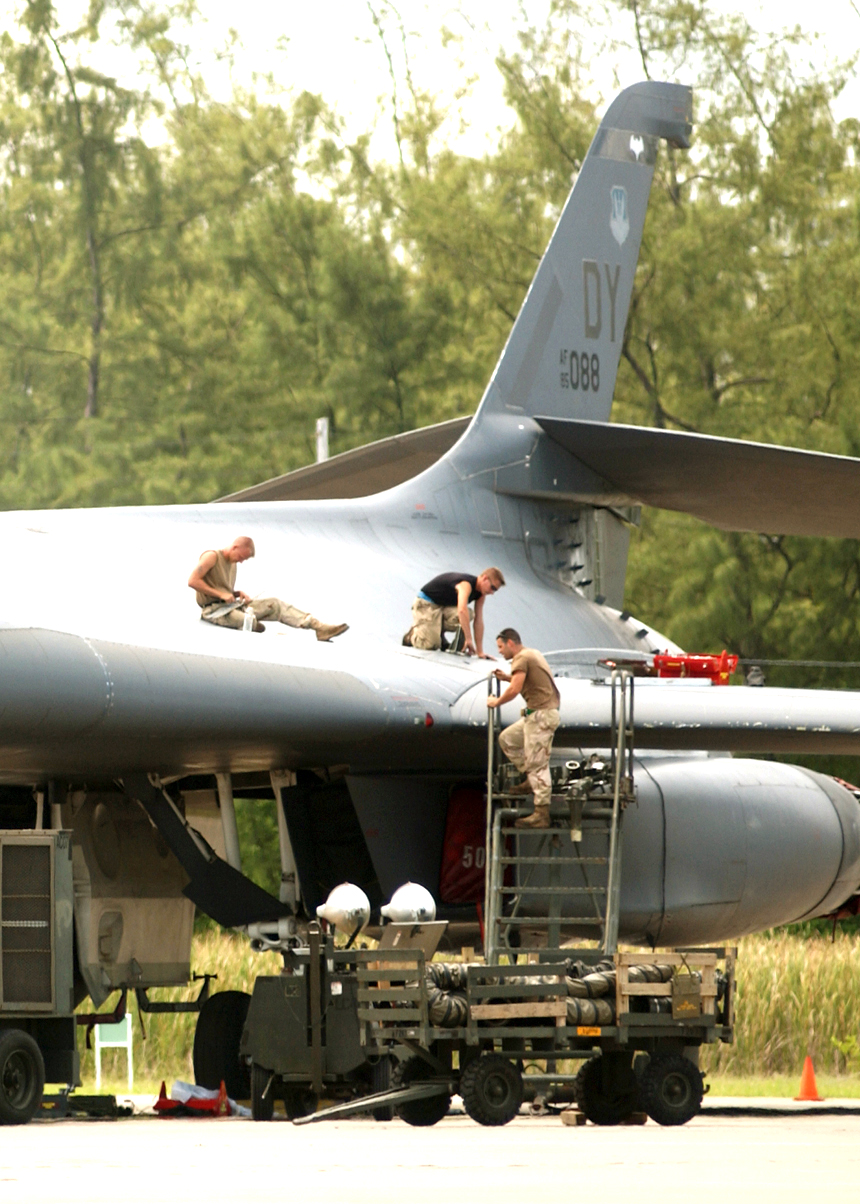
Bomb's away!

OPERATION ENDURING FREEDOM -- (From left) Senior Airman Alex Speener, Airman 1st Class Billy Doncer, and Senior Airman Casey Davis install an upper spring panel on a B-1B Lancer. They are assigned to the 40th Expeditionary Maintenance Squadron at a forward-deployed location.